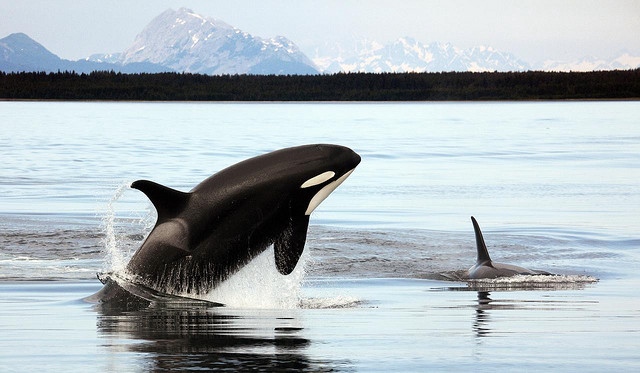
orcas in Alaska waters